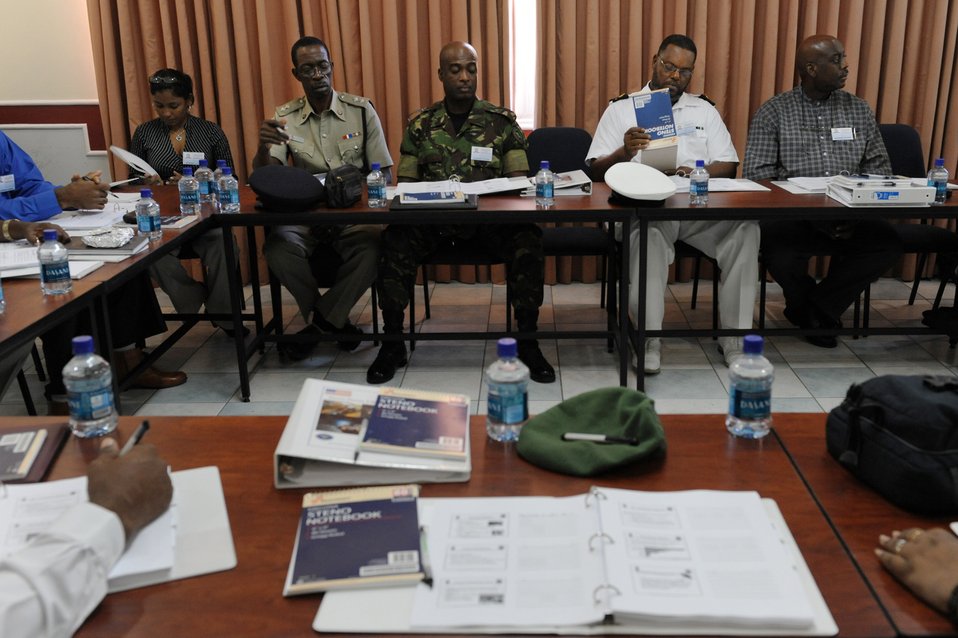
DIMO

Local officials attend a disaster planning and mass casualty response class for primary care providers Jul. 19, 2010, in Port of Spain, Trinidad and Tobago. The class is taught by the Defense Institute for Medical Operations, United States Air Force School of Aerospace Medicine, Brooks City-Base, Texas.